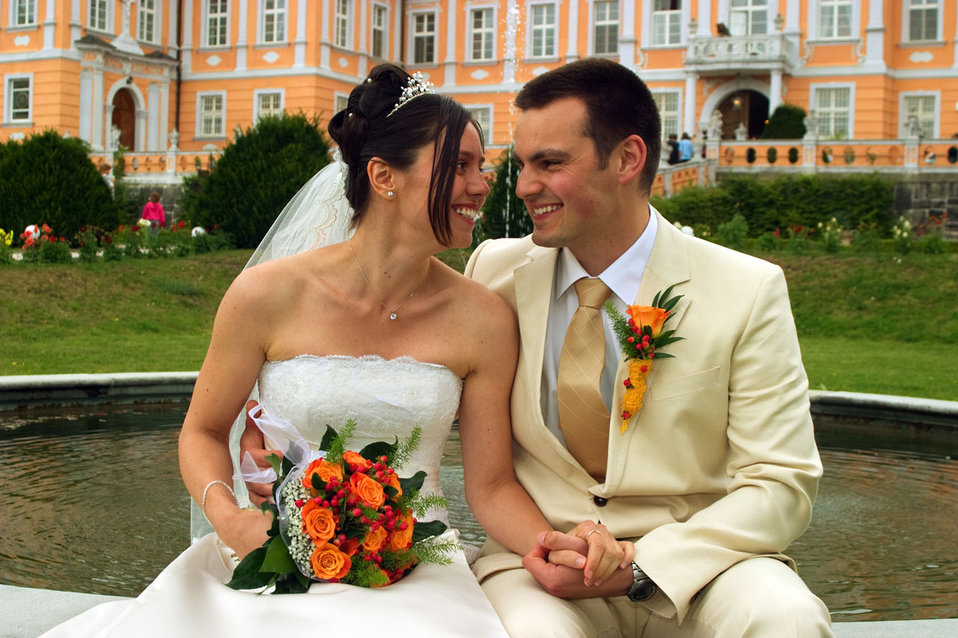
Bride and groom looking at each other..